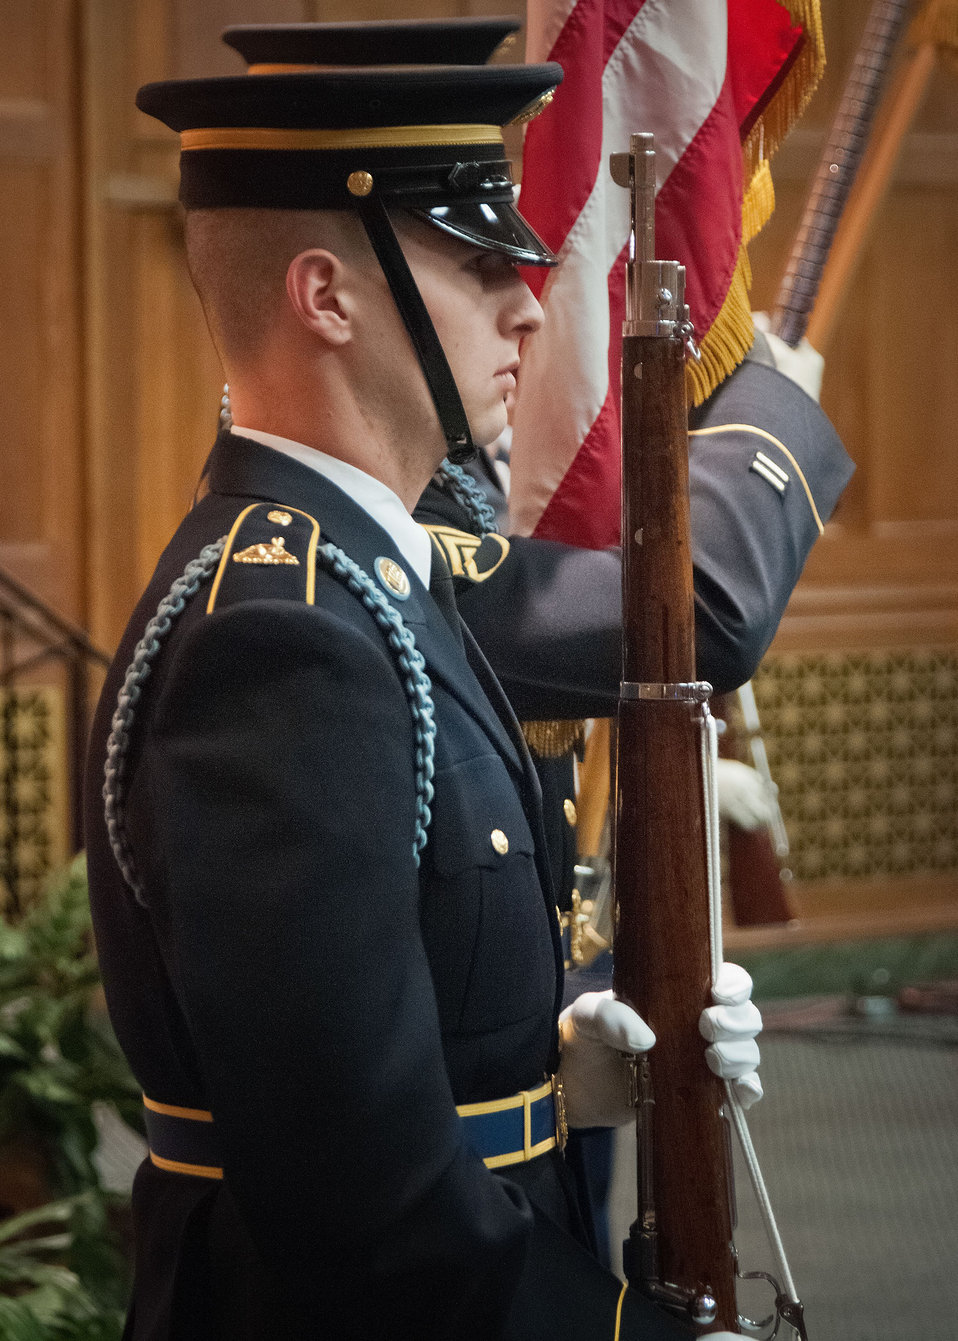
The U.S. Military District of Washington Joint Armed Forces Color Guard presents the Colors at the U.S. Department of Agriculture Veterans Day Observance: Honoring All Who Served, in Washington, D.C. on Wednesday, Nov. 7, 2012.